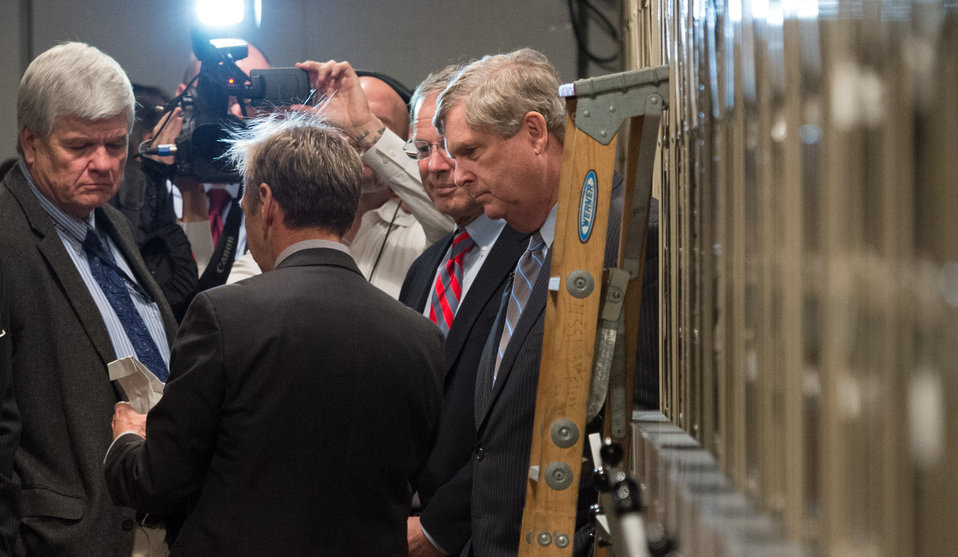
Agriculture Secretary Tom Vilsack, right, meets with Colorado State University (CSU) Dean of Agricultural Sciences Dr. Craig Beyrouty, second from right, and Agriculture Research Service (ARS) Northern Plains Area Director Dr. Larry Chandler, left, listen to ARS National Center for Genetic Resources Preservation (NCGRP) Research Leader Geneticist Dr. David Dierig, center, show typical seed packet storage at The U.S. Department of Agriculture (USDA), Agriculture Research Service (ARS), National Center for Genetic Resources Preservation (NCGRP), National Plant Germplasm System (NPGS) cold storage vault, in Ft. Collins, CO, on Wednesday, Nov. 6, 2013.